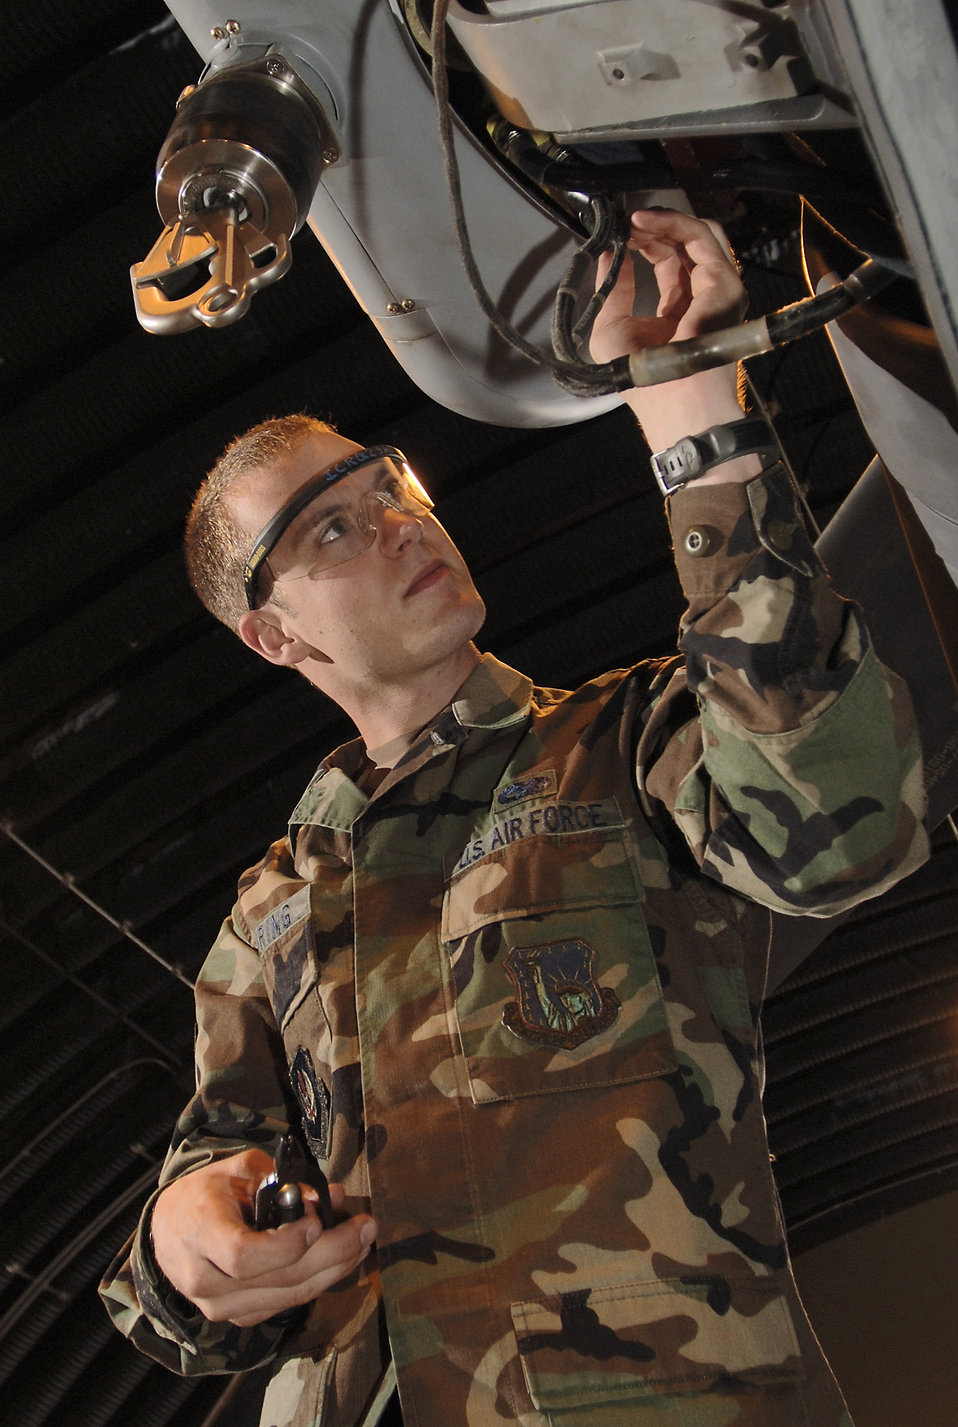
Rescue unit faces moving challenges

Airman 1st Class Ryan Goehrine installs a hoist on an HH-60G Pave Hawk helicopter at Royal Air Force Lakenheath, England, on Aug. 2. The Airman is with the 56th Aircraft Maintenance Unit, which maintains the helicopters for the 56th Rescue Squadron. The squadron moved here from Keflavik Air Base, Iceland, in May after 35 years of service there.